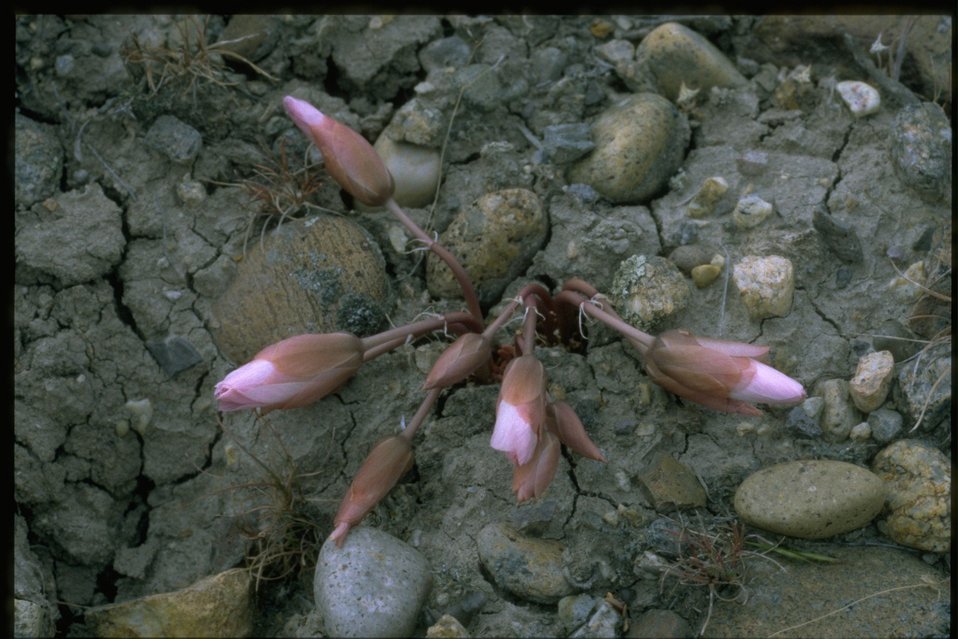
Medium shot of Bitterroot wildflowers.